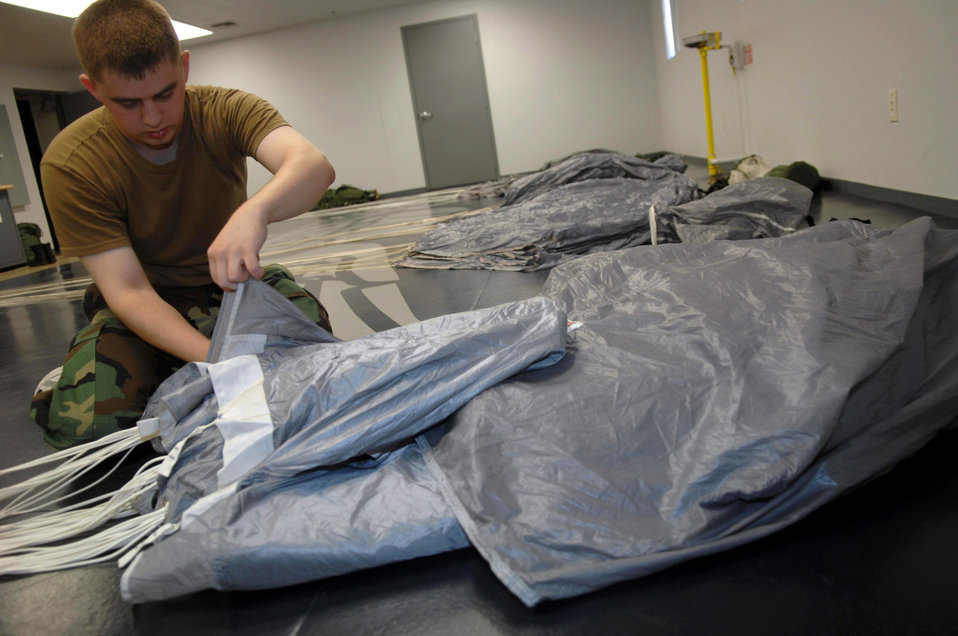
Aircrews depend on these Airmen

Senior Airman Daniel Danker packs a parachute June 25 at Davis-Monthan Air Force Base, Ariz. Airman Danker is an aircrew flight equipment journeyman assigned to the 563rd Operation Support Squadron where he maintains parachutes for pararescuemen, along with other types of survival equipment.